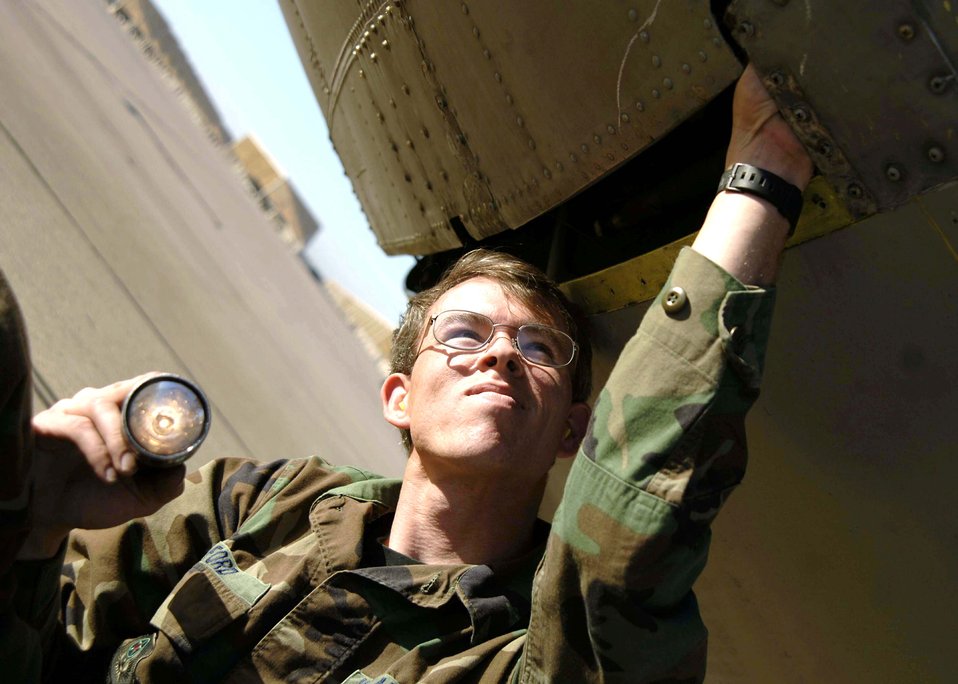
Keeping the fleet going

DAVIS-MONTHAN AIR FORCE BASE, Ariz. (AFPN) -- Tech. Sgt. Kyle Ford checks for pressurization leaks on the ramp door of a HC-130P during a pre-flight inspection. Sergeant Ford is a crew chief with the 563rd Maintenance Squadron.